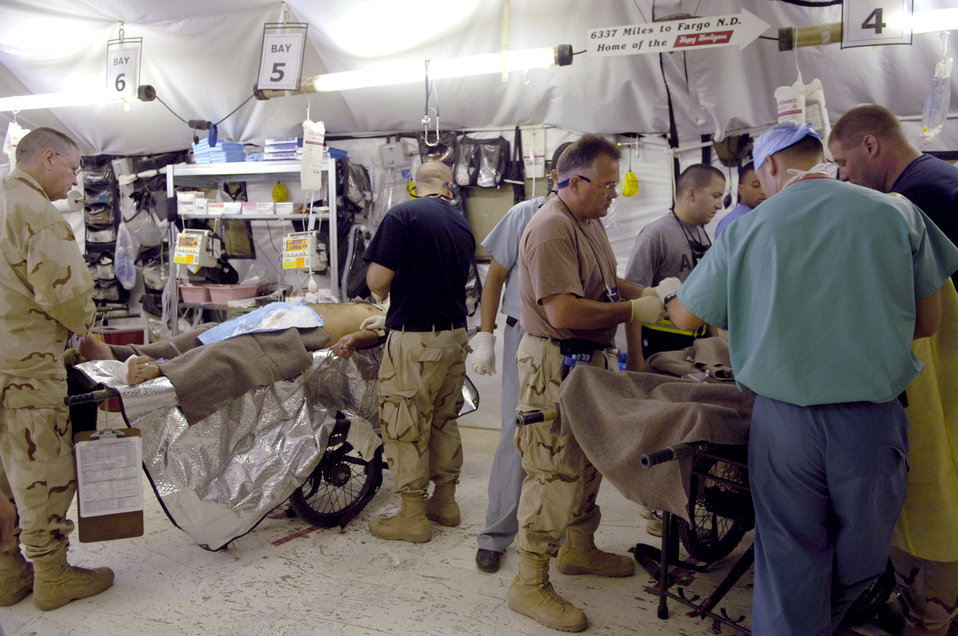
Specialized care

Medics from the Air Force Theater Hospital treat emergency room patients at Balad Air Base, Iraq, on Aug. 2. The hospital provides Level 1 trauma and specialized medical care.